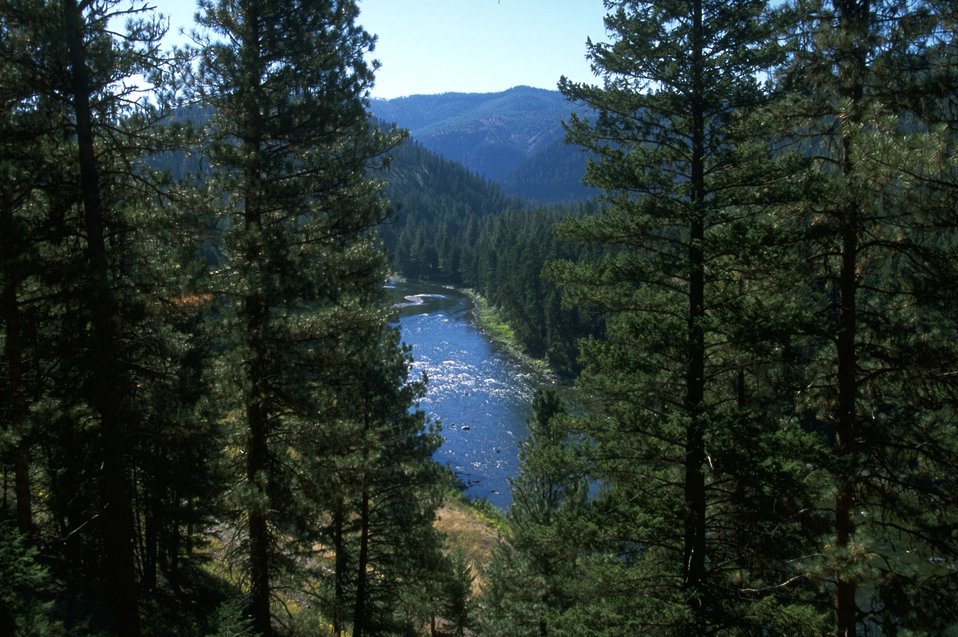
Blackfoot River